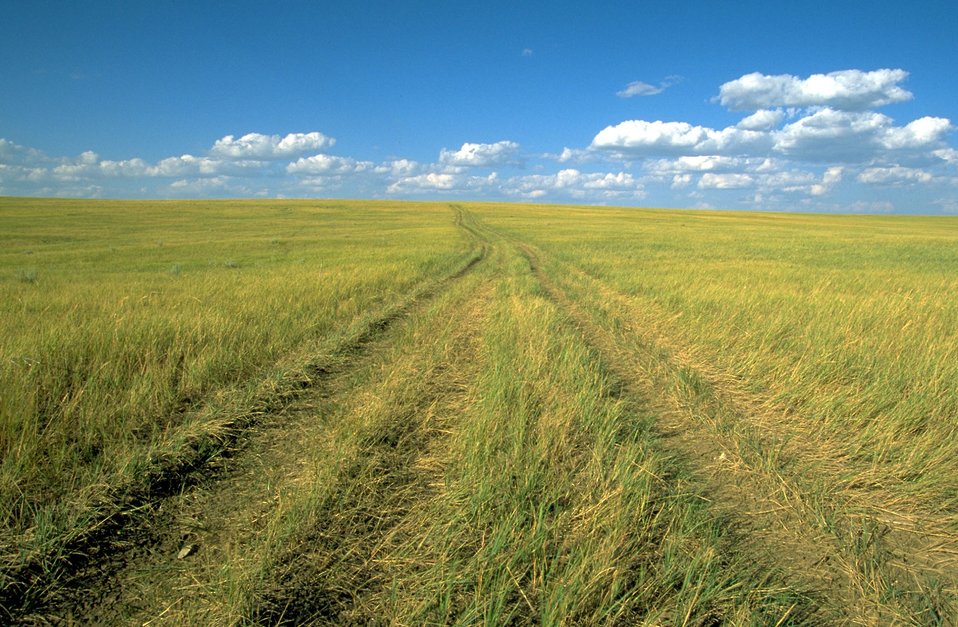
OHV Trail across grassland 40 miles north of Belle Fourche